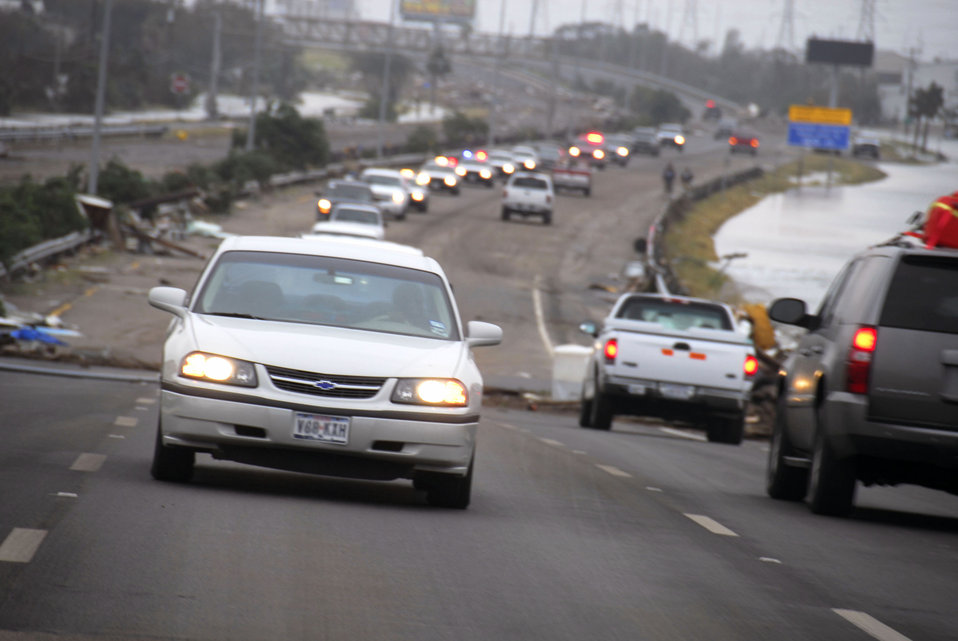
Convoy: Help is on the way!

Military forces and representatives of agencies from throughout Texas and the U.S. gathered in San Antonio and then convoyed east. More than 500 vehicles and 1,000 people headed to various locations in Southeast Texas to begin search and rescue and recovery efforts in the aftermath of Hurricane Ike.